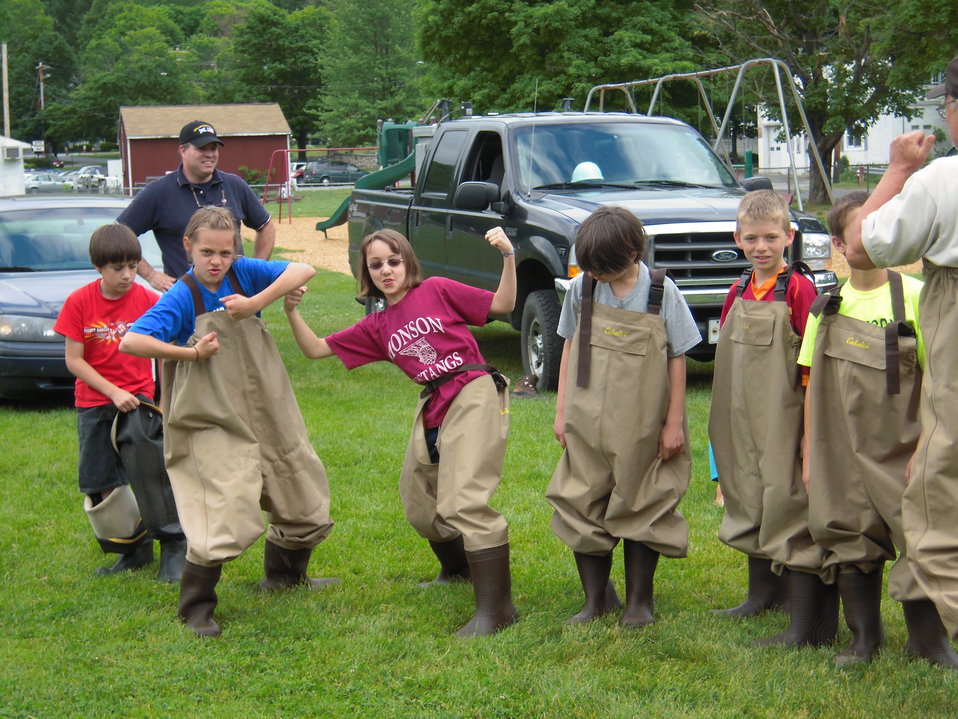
Ready to go